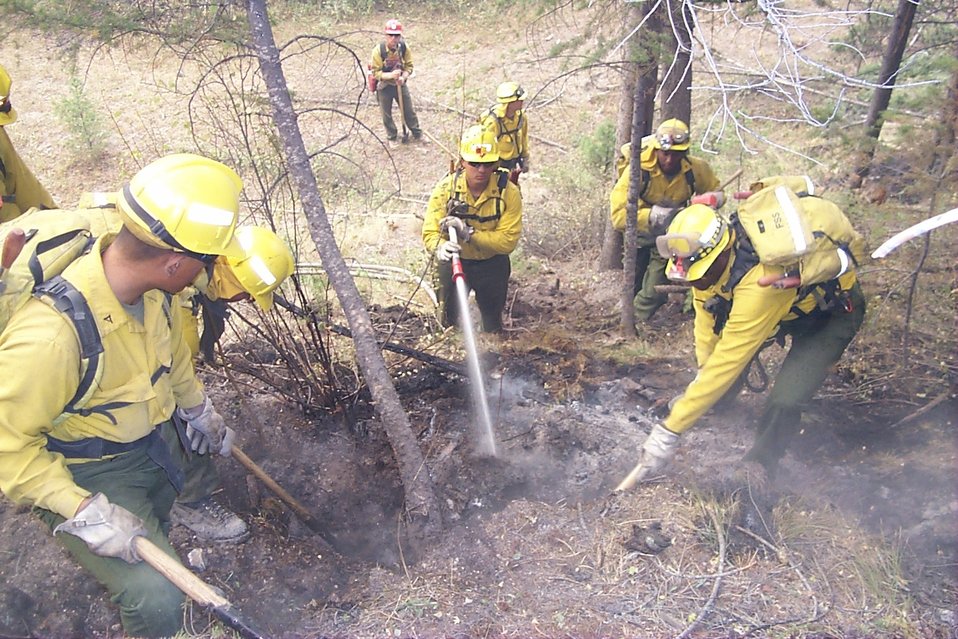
Line crew Fire Clearwater Fire Salmon Field Office USRD Upper Snake River District